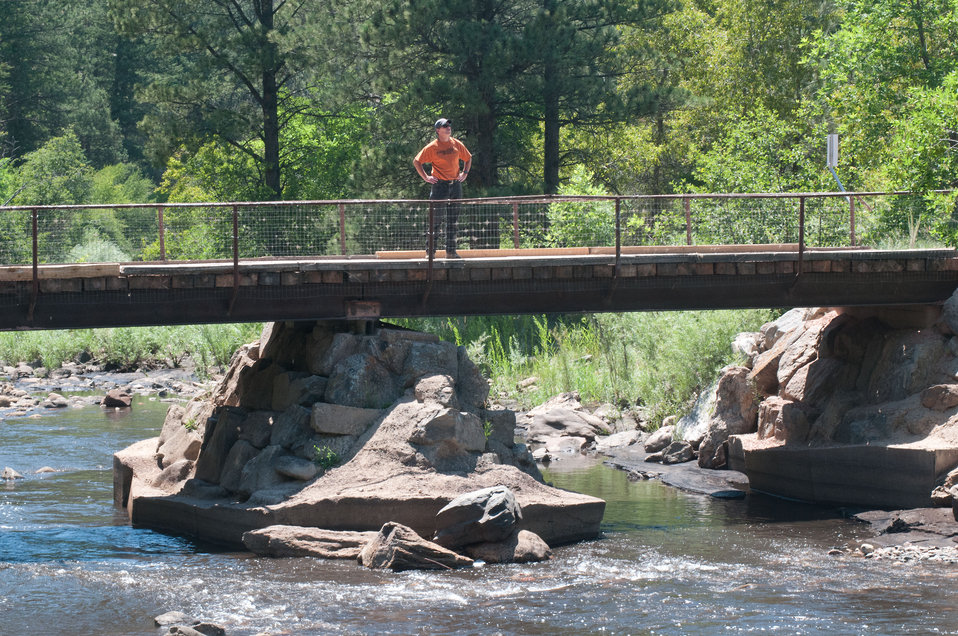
U.S. Department of Agriculture District Conservationist Todd Boldt peers down from a bridge to see the effects of the water in the Hewlett Gulch Fire, in the Poudre Canyon area, on Friday, July 20, 2012, near Fort Collins, Colorado. Unmitigated runoff have turned the water in this river from clear water to nearly black water heavily laden with ash, silt, and burnt debris that recent thunderstorms have already washed down from the mountainsides. When he dug down into the riverbanks, he found ash 18 inches below the surface, at the water’s edge. At its peak more than 400 firefighters were battling fires pushed by 50 mph winds. When the last embers were cooled, more than 12-square miles lay blacked at a cost of approximately 3.2 million dollars to fight. The aerial distribution of straw has successfully kept nearby Seaman Reservoir clean for the drinking water of the City of Greeley. Forest Service lands receive straw, while private and other lands receive a seed mix and straw to promote ground cover plant growth on ash-covered lands. In total, 1,800 tons of straw will be applied during the 14-day operation. One quarter of the cost was paid by the City of Greeley and the U.S. Department of Agriculture funded the remainder.